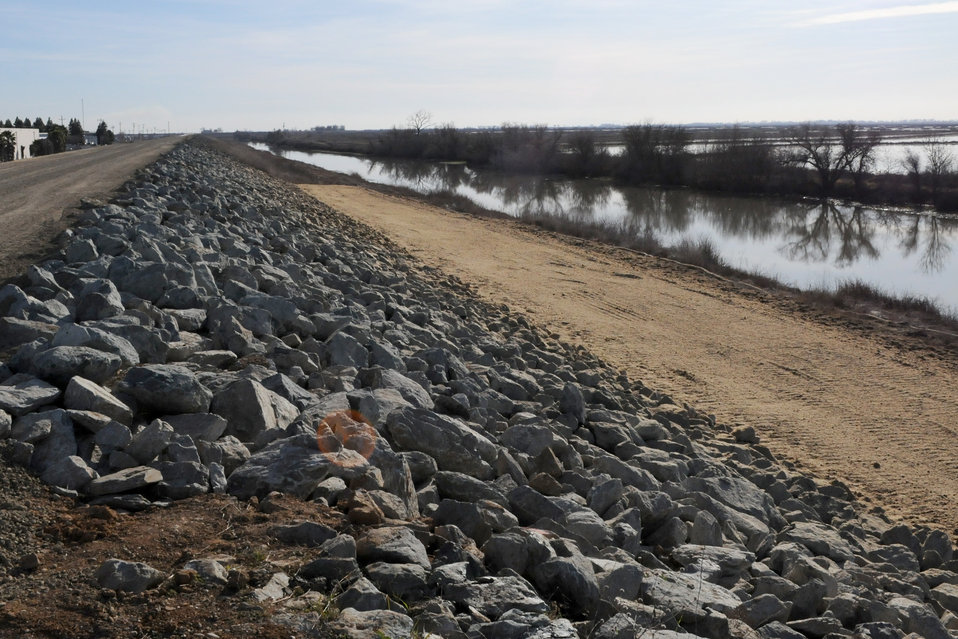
Corps completes Yolo Bypass levee repairs

Completed in 2009, the U.S. Army Corps of Engineers rebuilt and added rip rap, or large rock, to the waterside banks of a 400-foot stretch of levee near the Yolo Bypass to address issues with slumping. The repair work was completed as part of the West Sacramento Project, a joint effort with the West Sacramento Area Flood Control Agency and the Central Valley Flood Protection Board to improve the levees surrounding West Sacramento.